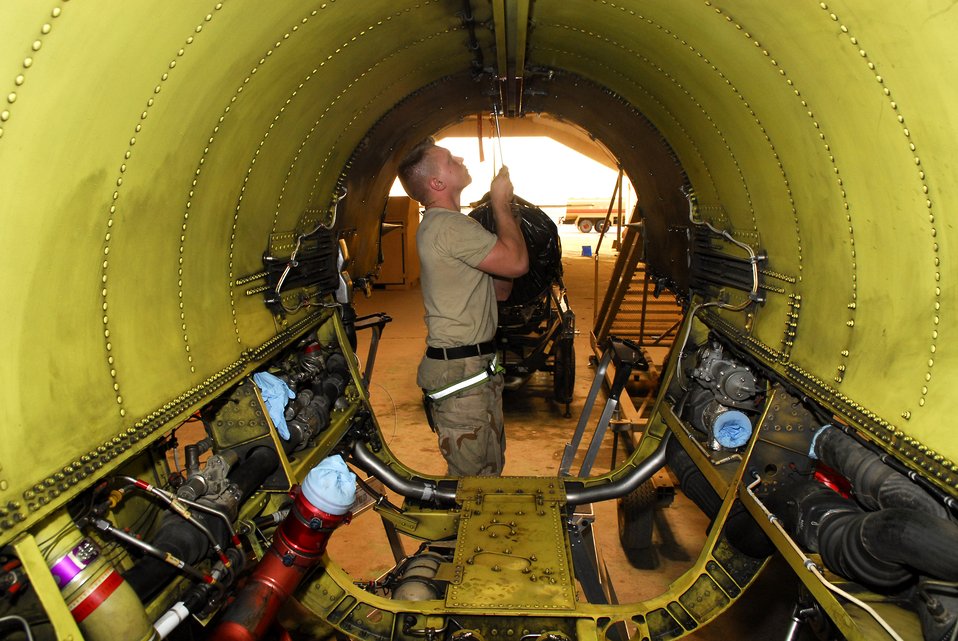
Putting the pieces back together

Airman 1st Class Matthew Reynolds tightens down the heat shields on the engine bay of an F-16 Fighting Falcon during a phase inspection at Balad Air Base, Iraq, Nov 11. Airman Reynolds is deployed from Hill Air Force Base, Utah.